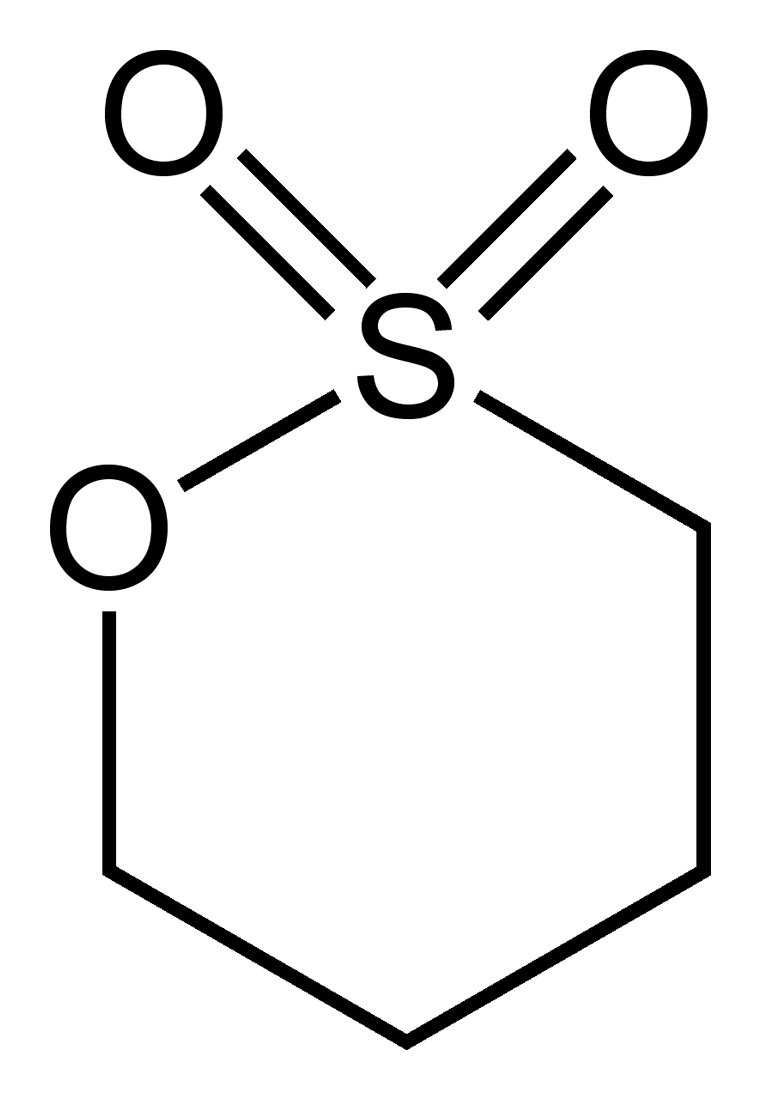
Skeletal formula of 1,4-butanesultone